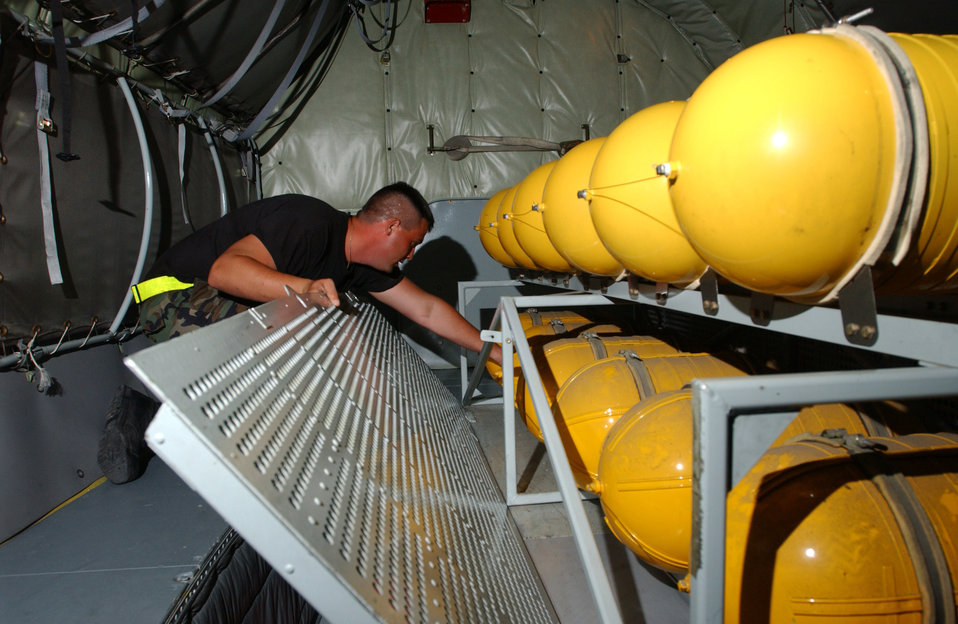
O2 check

ROYAL AIR FORCE MILDENHALL, England -- Staff Sgt. Robert Spain checks the oxygen tanks on a KC-135 Stratotanker here July 13. Sergeant Spain is a crew chief with the 100th Aircraft Maintenance Squadron.